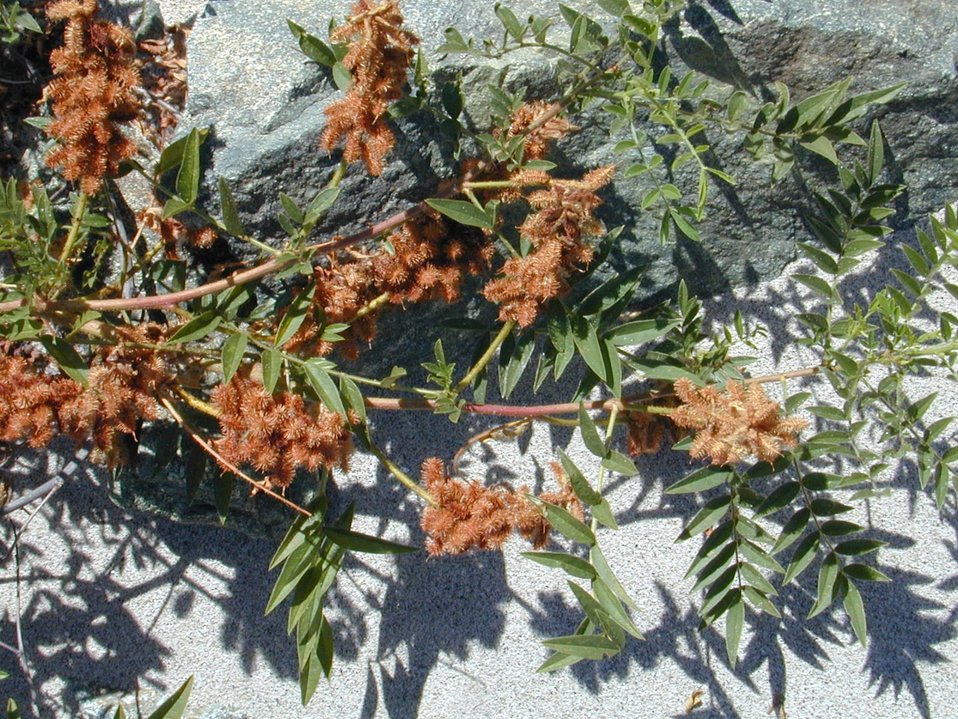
Rangeland plants Cottonwood Field Office UCSC Upper Columbia Salmon Clearwater Districtr